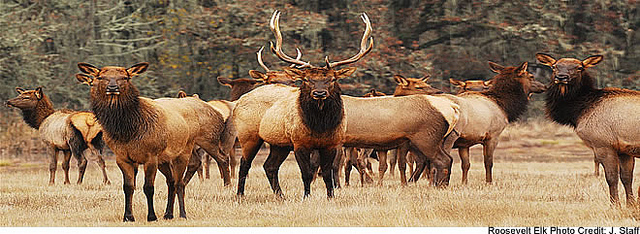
roosevelt elk

William L. Finley Refuge, OR